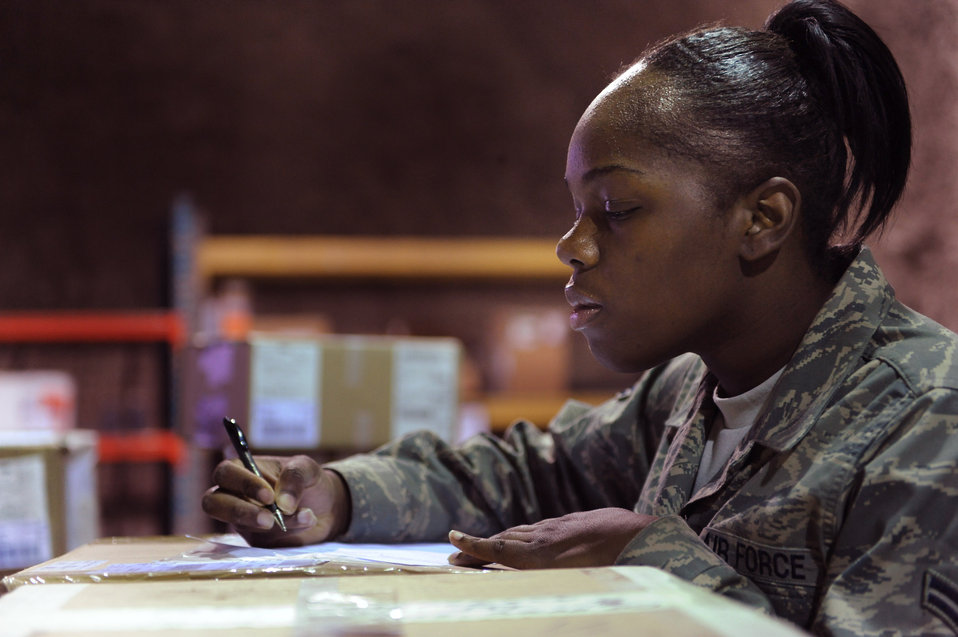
Making a list and checking it twice

Airman 1st Class Jasmine Charles in-checks cargo Feb. 17 at Joint Base Balad, Iraq. The traffic management office is responsible for in-checking Air Force cargo from five parcel carriers. She is a 332nd Expeditionary Logistics Readiness Squadron traffic management apprentice deployed from Minot Air Force Base, S.D. Airman Charles is a native of Seattle.